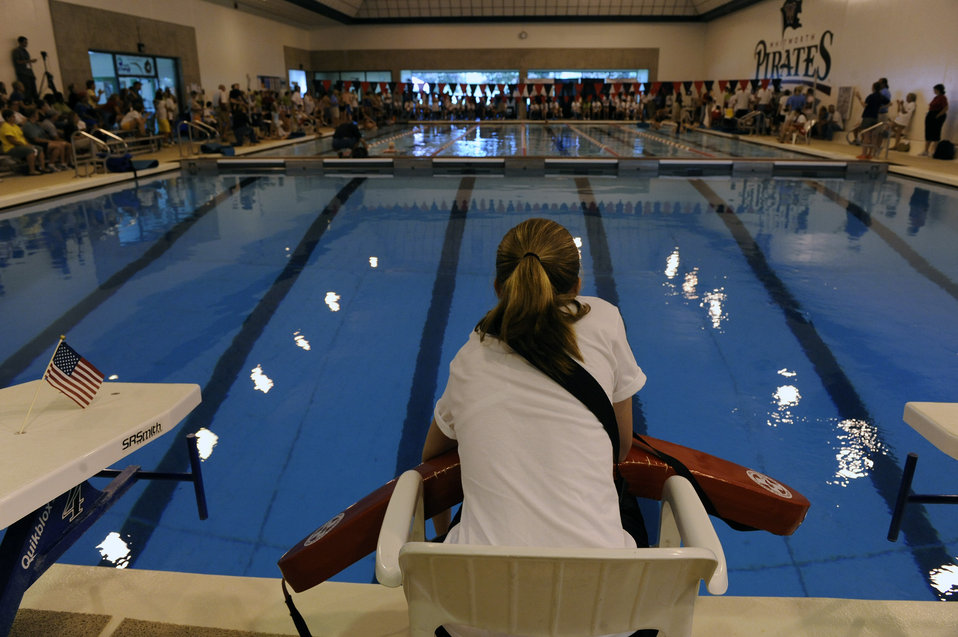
Former Airman competes in veterans Wheelchair Games

Veterans gather inside the Whitworth University swimming pool during the 29th National Veterans Wheelchair Games July 15 in Spokane, Wash. The 29th National Veterans Wheelchair Games runs through July 19.